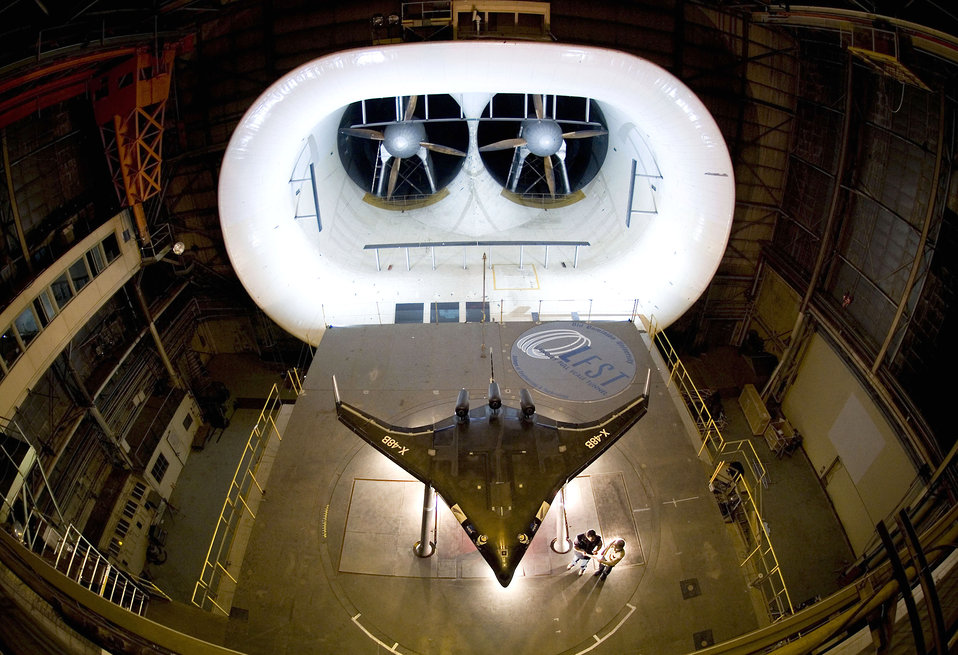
Research lab tests fuel-efficient, flying-wing aircraft

A prototype of the X-48B has been installed at the full scale wind tunnel at NASA's research center at Langley Air Force Base, Va. The Air Force Research Laboratory partnered with Boeing Phantom Works and the National Aeronautics and Space Administration to study the advanced aircraft concept.